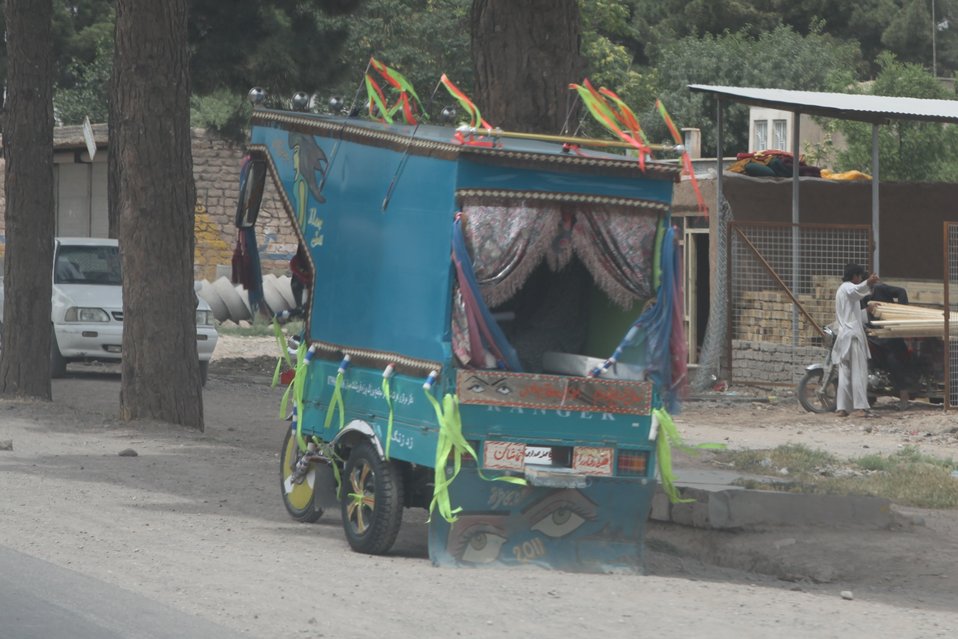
100525 Hirat Marble Conference 573